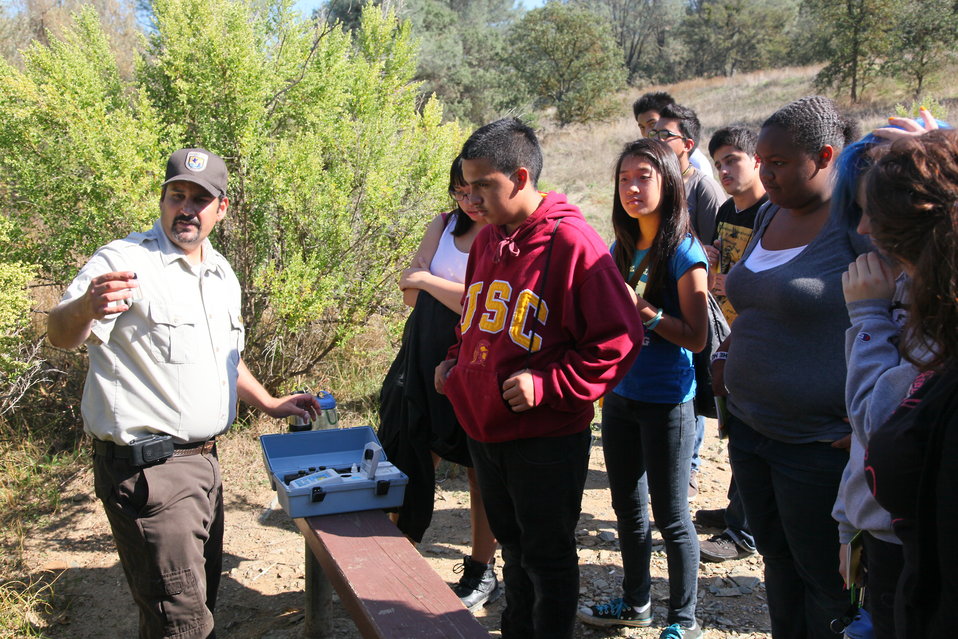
A river full of education

Ramon Martin, a fish biologist with the U.S. Fish and Wildlife Service, displays a water sample from the Calaveras River to high school students near New Hogan Dam, Valley Springs, Calif., Oct. 22, 2011. The students, from Stagg and Bear Creek high schools of Stockton, Calif., experienced real life learning through activities including water sampling, aquatic life samples, an underwater video camera and fish habitats as part of the Calaveras River Education and Appreciation Day. The U.S. Army Corps of Engineers Sacramento District helped host the event, in partnership with the U.S. Fish & Wildlife Service’s “Connecting People with Nature” program.